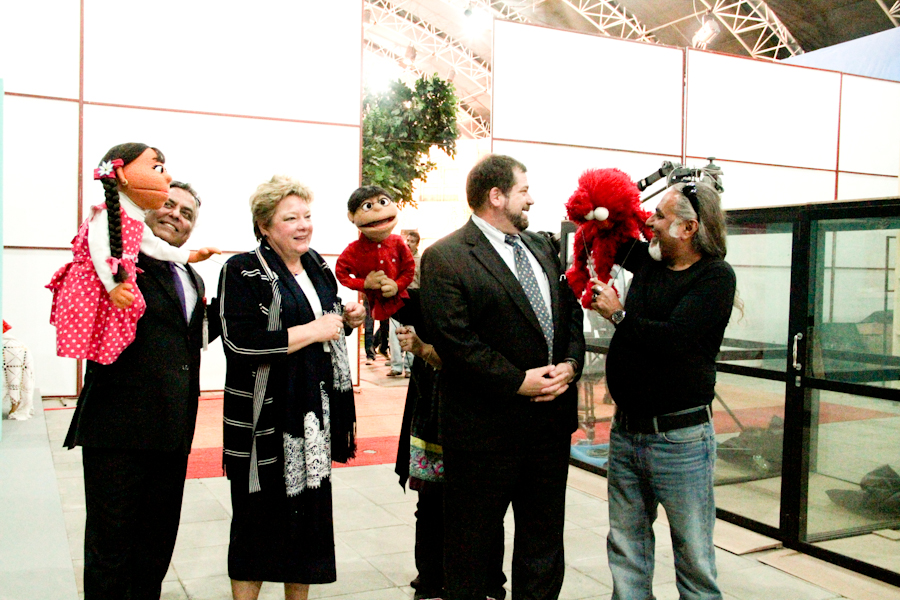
Sim Sim Hamara

Lahore, February 20, 2012 - Deputy Director of the USAID Mission in Pakistan Karen Freeman and Director of the Pakistan Desk at the USAID headquarters in Washington, Jeffrey Bakken visit the Sim Sim Hamara Film Studio in Lahore.